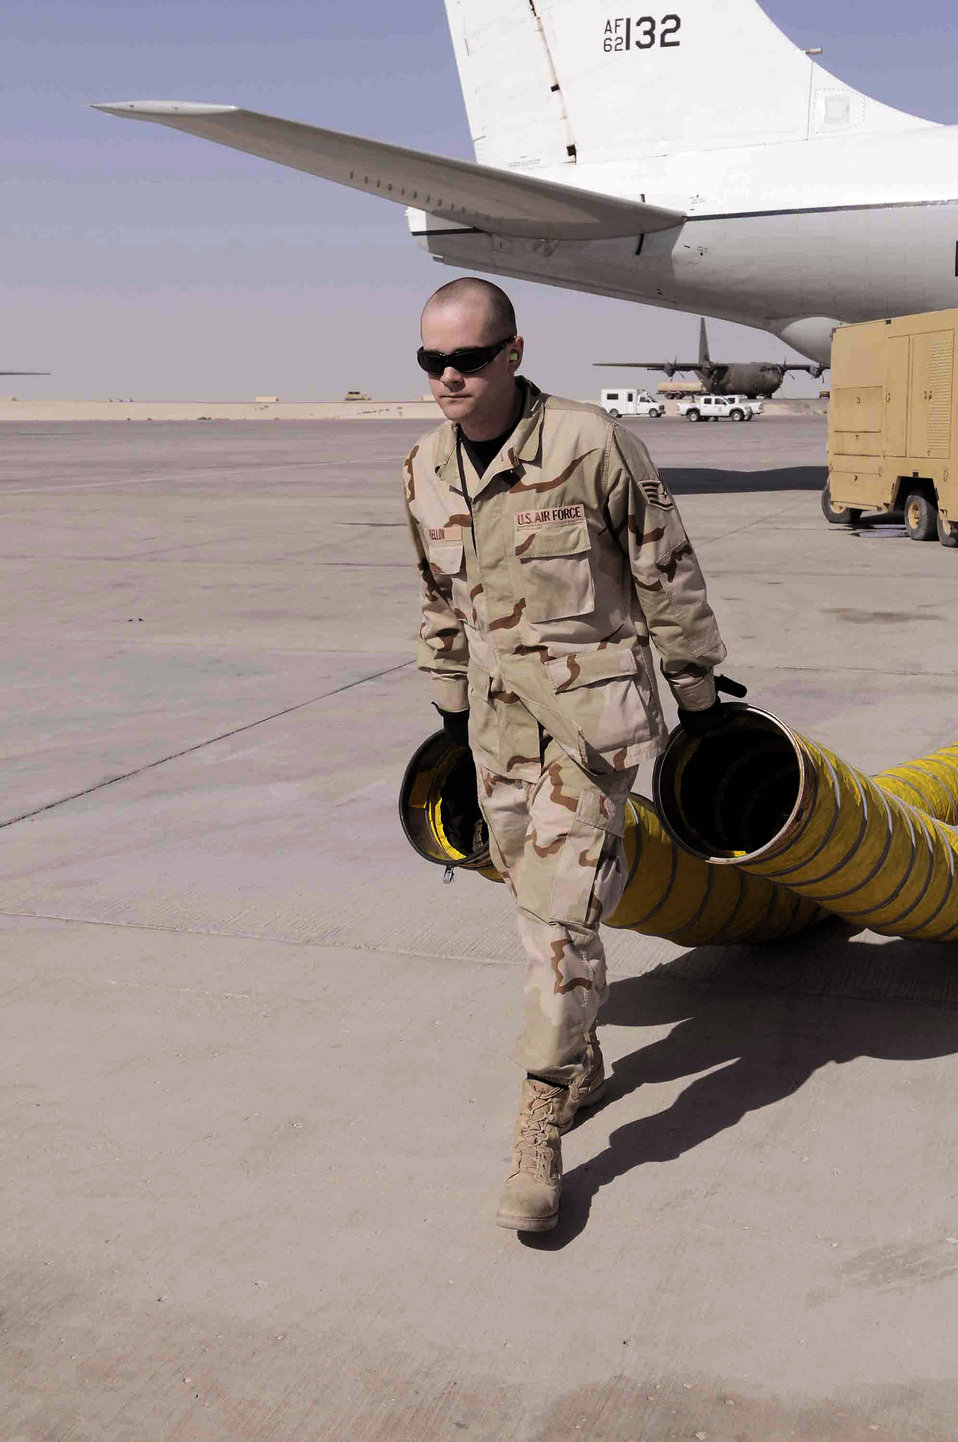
RC-135 surpasses 50,000 flying-hour mark

Staff Sgt. James A. Mellon removes hoses from an RC-135 Rivet Joint March 12 at a Southwest Asia air base. Aircraft hoses are used to keep the inside of the aircraft cool. Sergeant Mellon, assigned to the 379th Expeditionary Reconnaissance Squadron, is deployed from Offutt Air Force Base, Neb.